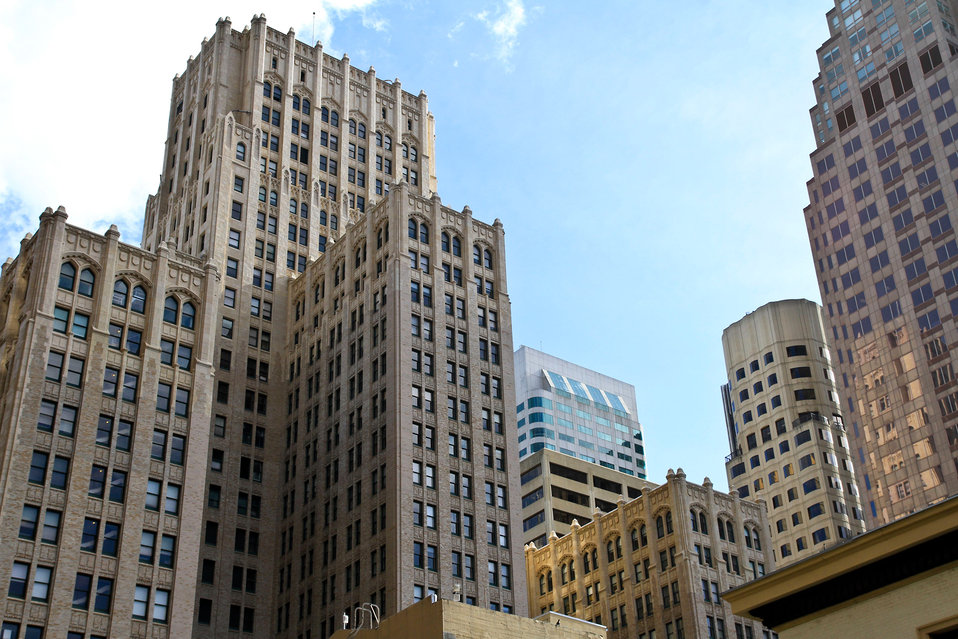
San francisco skyline

Skyscrapers in the financial district.